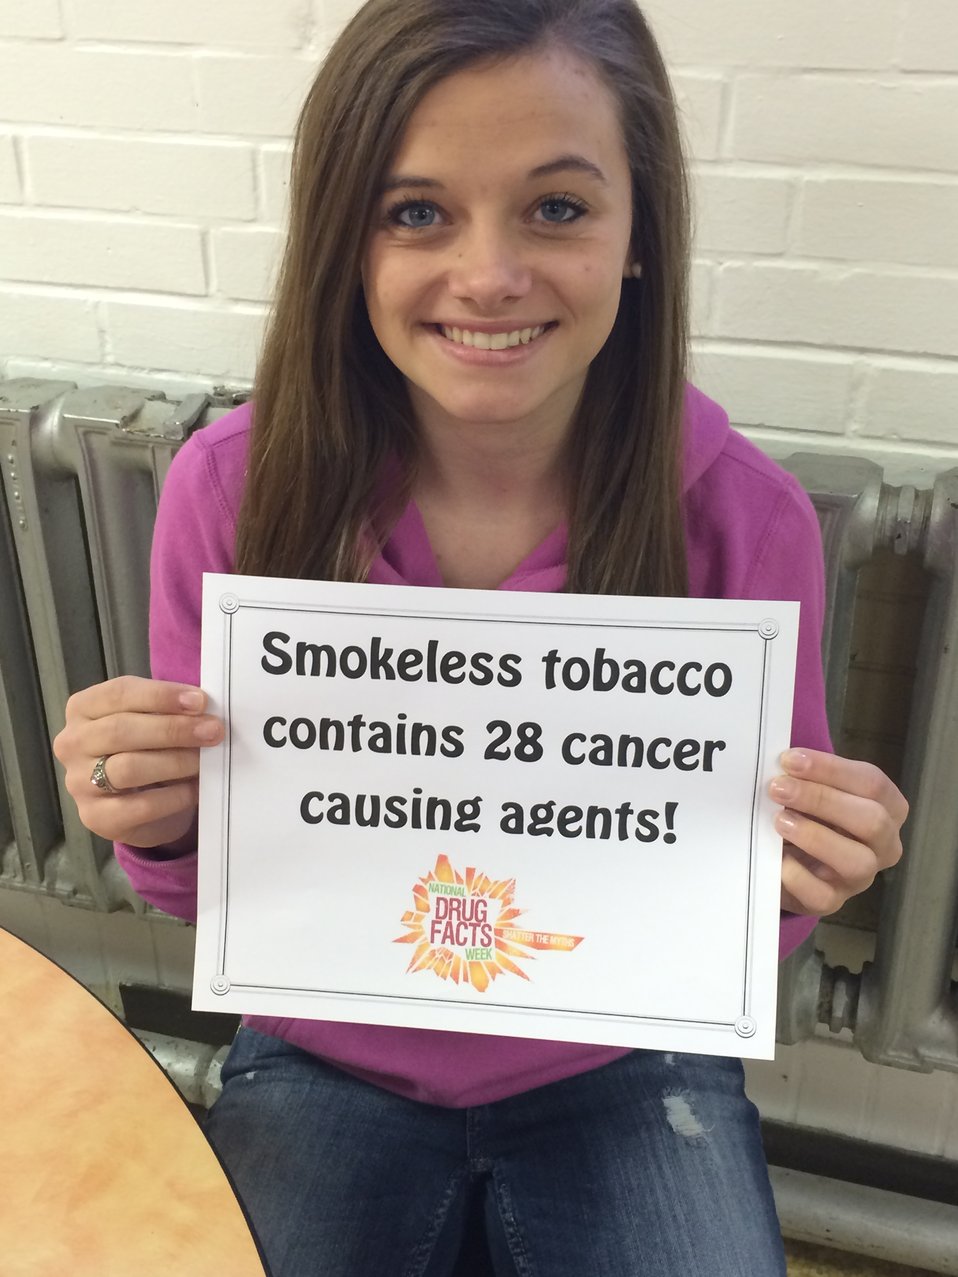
NDFW: Drug Facts

Teenagers from the Van Buren County SAFE Coalition's, Youth Leadership Council (YLC) in Keosauqua, Iowa participate in various events during National Drug Facts Week, 2014.